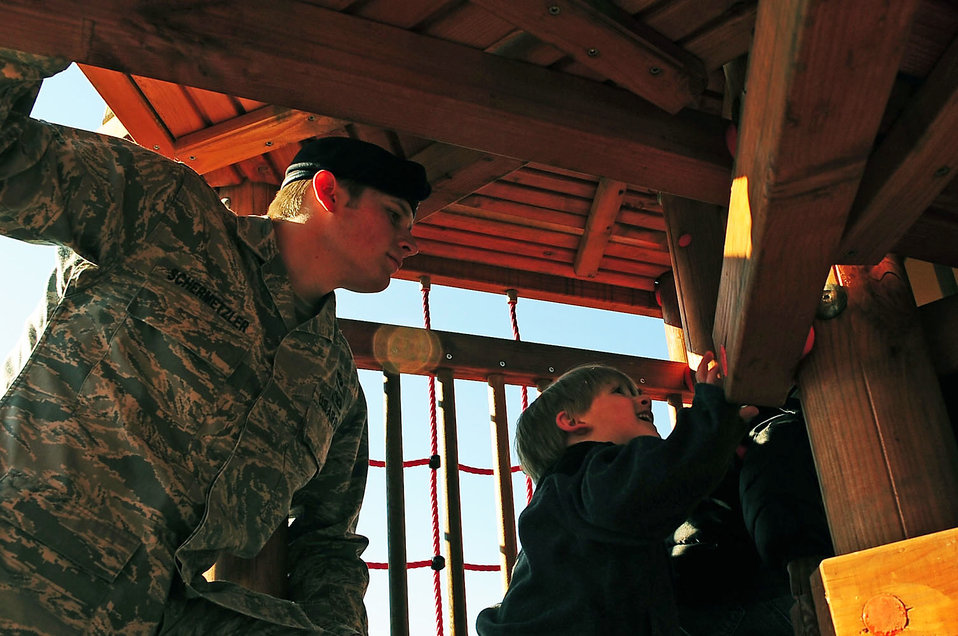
Ramstein Airmen provide 'boot camp' for military children

Senior Airman Joseph Schermetzkr follows children up a tower on the playground during the child development center's